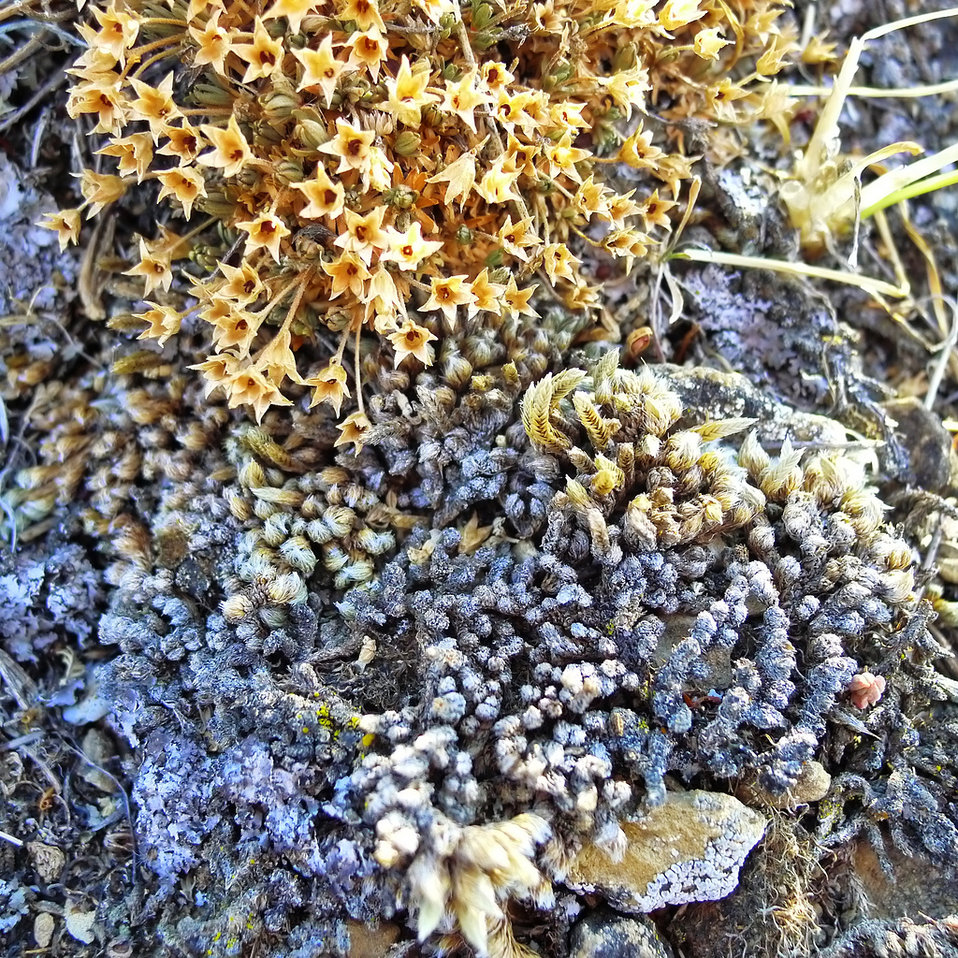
alpine stars

Red Rock Lakes National Wildlife Refuge, MT